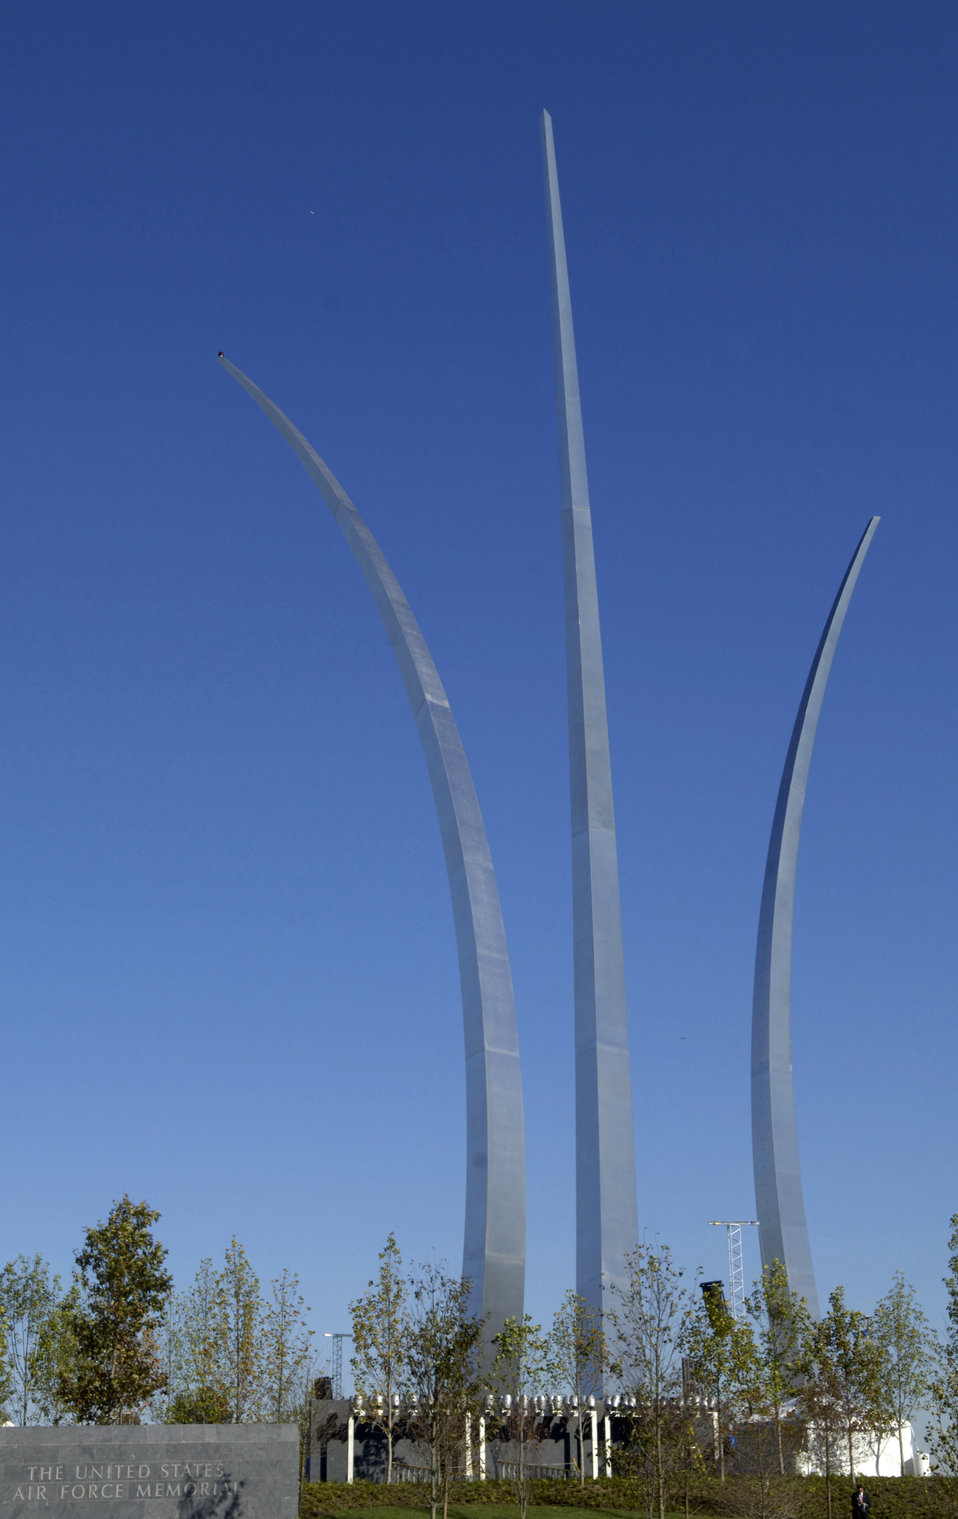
Wreath Ceremony

Hundreds gathered at the base of the new Air Force Memorial as Secretary of the Air Force Michael W. Wynne officially closed the Air Force Memorial commemoration with a wreath laying ceremony in Arlington, Va., Oct. 15, 2006. Looking on are, from left: Chief Master Sgt. of the Air Force Rodney J. McKinley, Air Force Memorial Foundation Chairman Ross Perot Jr. , and Air Force Chief of Staff Gen. T. Michael Moseley. On behalf of all American citizens President George W. Bush accepted the Air Force Memorial from Air Force Memorial Foundation Chairman Ross Perot Jr. during the previous day's dedication ceremony at the base of the Air Force Memorial that overlooks the Pentagon. Designed by the late James Ingo Freed the memorial with its three soaring spires inspired by the U.S. Air Force Thunderbirds bomb burst manuever, pays tribute to and honors the patriotic men and women of the U.S. Air Force and its predeccessor organizations. An open house was held near the Pentagon in conjunction with the dedication ceremony which featured performances by the U.S. Air Force Band, the U.S. Air Force Honor Guard drill team, and culminated with a concert featuring country music performer LeeAnn Womack.